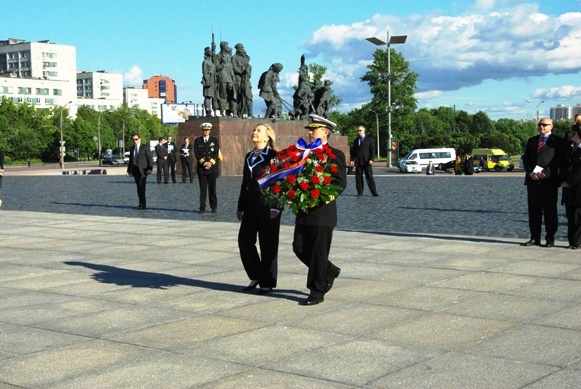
Secretary Clinton With Vice Adm. Harris

U.S. Secretary of State Hillary Rodham Clinton walks with Vice Admiral Harry B. Harris, Jr., to the Monument to the Heroic Defenders of Leningrad in St. Petersburg, Russia, on June 28, 2012.